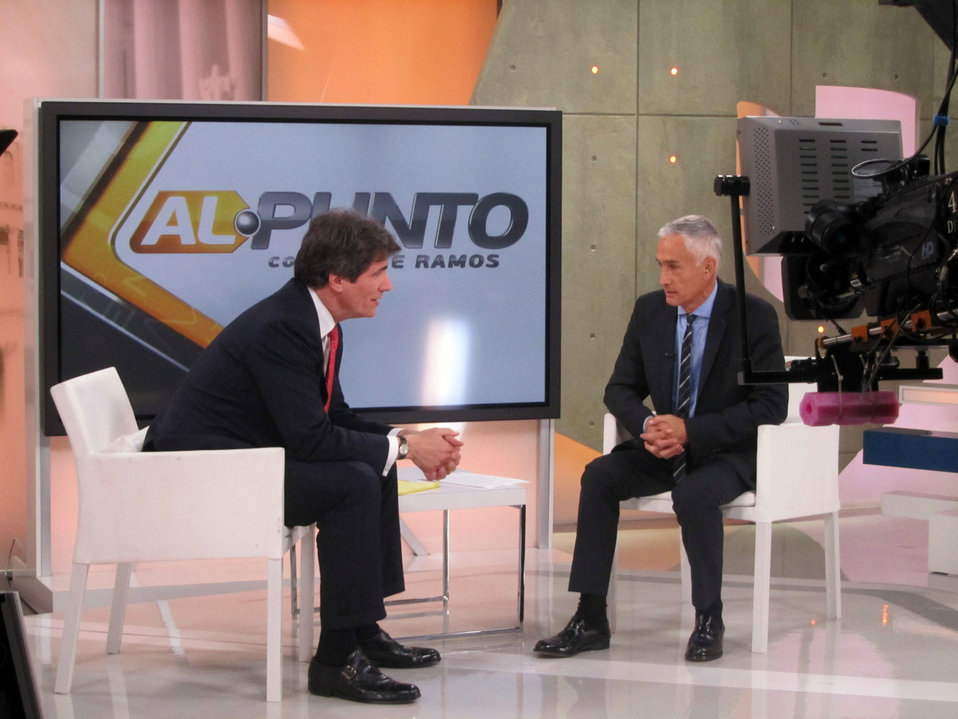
Assistant Secretary Fernandez Chats With Univision's Jorge Ramos

Assistant Secretary of State for Economic and Business Affairs Jose W. Fernandez chats with Univision's Jorge Ramos before the interview for the program, Al Punto, in Miami, Florida, February 6, 2013.